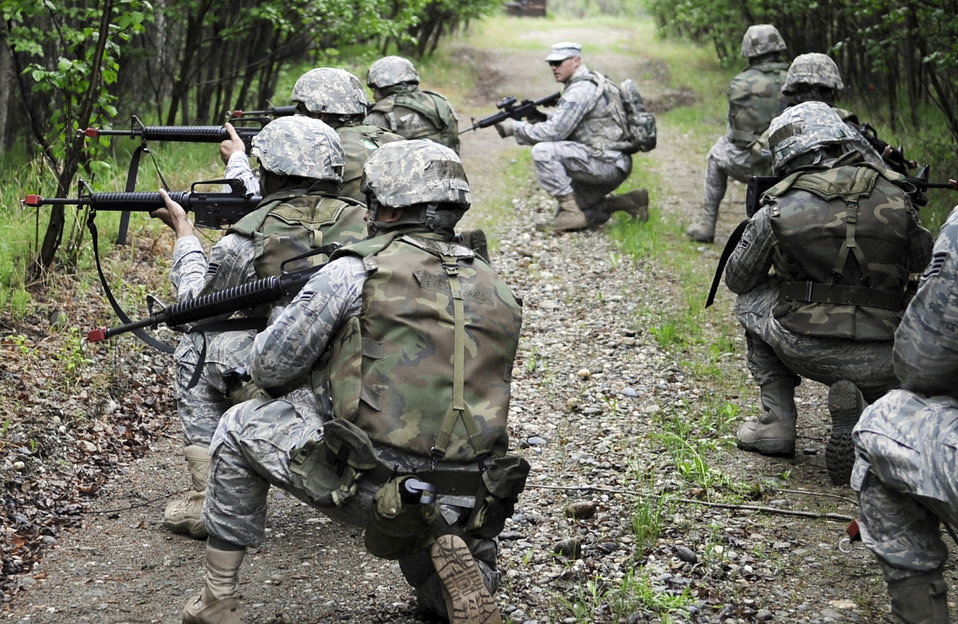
Dismounted patrol preparedness exercise

Airmen